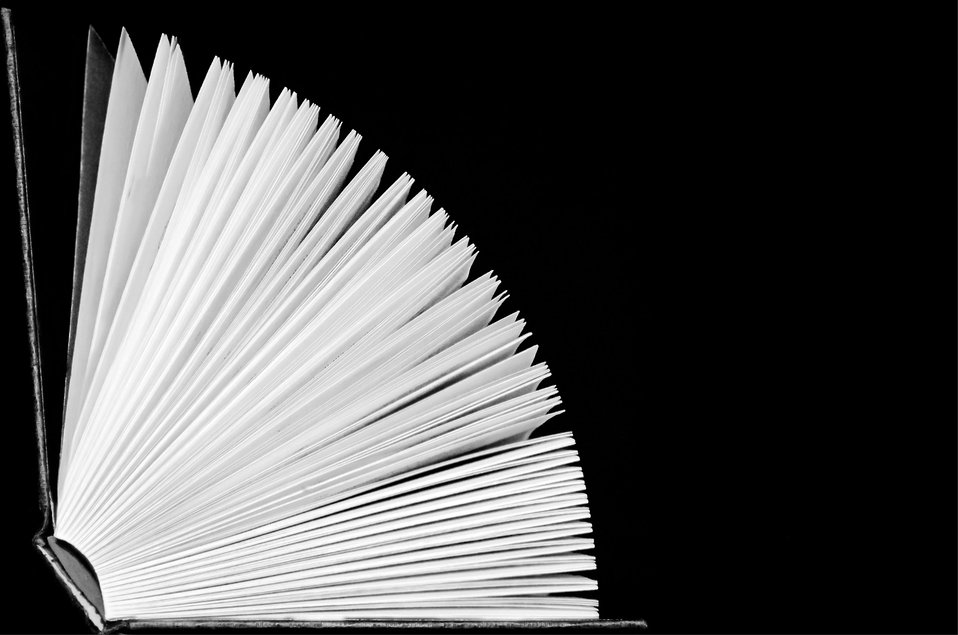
Open book on black background.